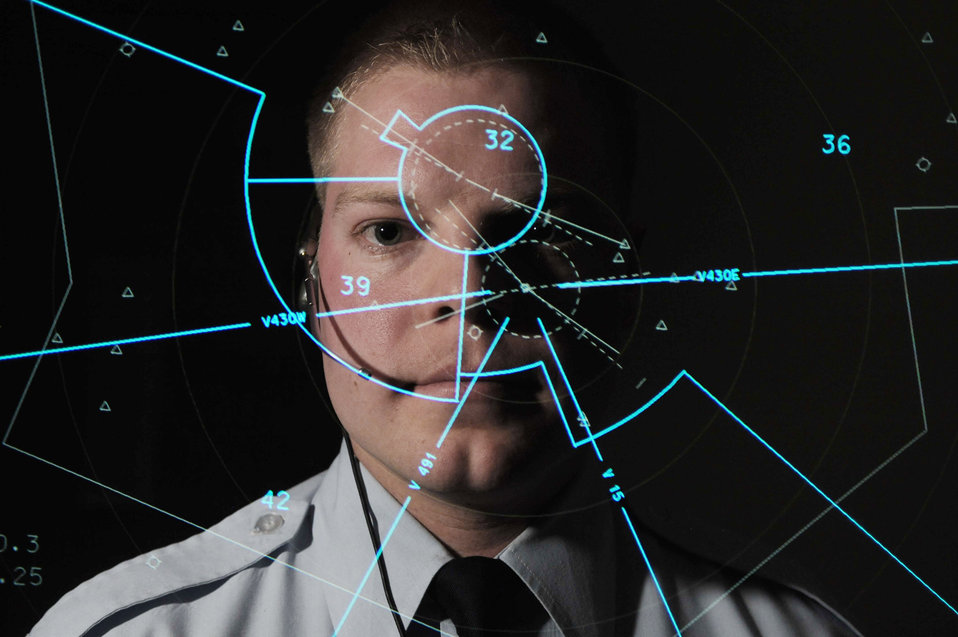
Watchful eye on the sky

Senior Airman Phillip Taylor views a radar scope, March 22, 2010, at Ellsworth Air Force Base, S.D. He is an air traffic control specialist with the 28th Operations Support Squadron